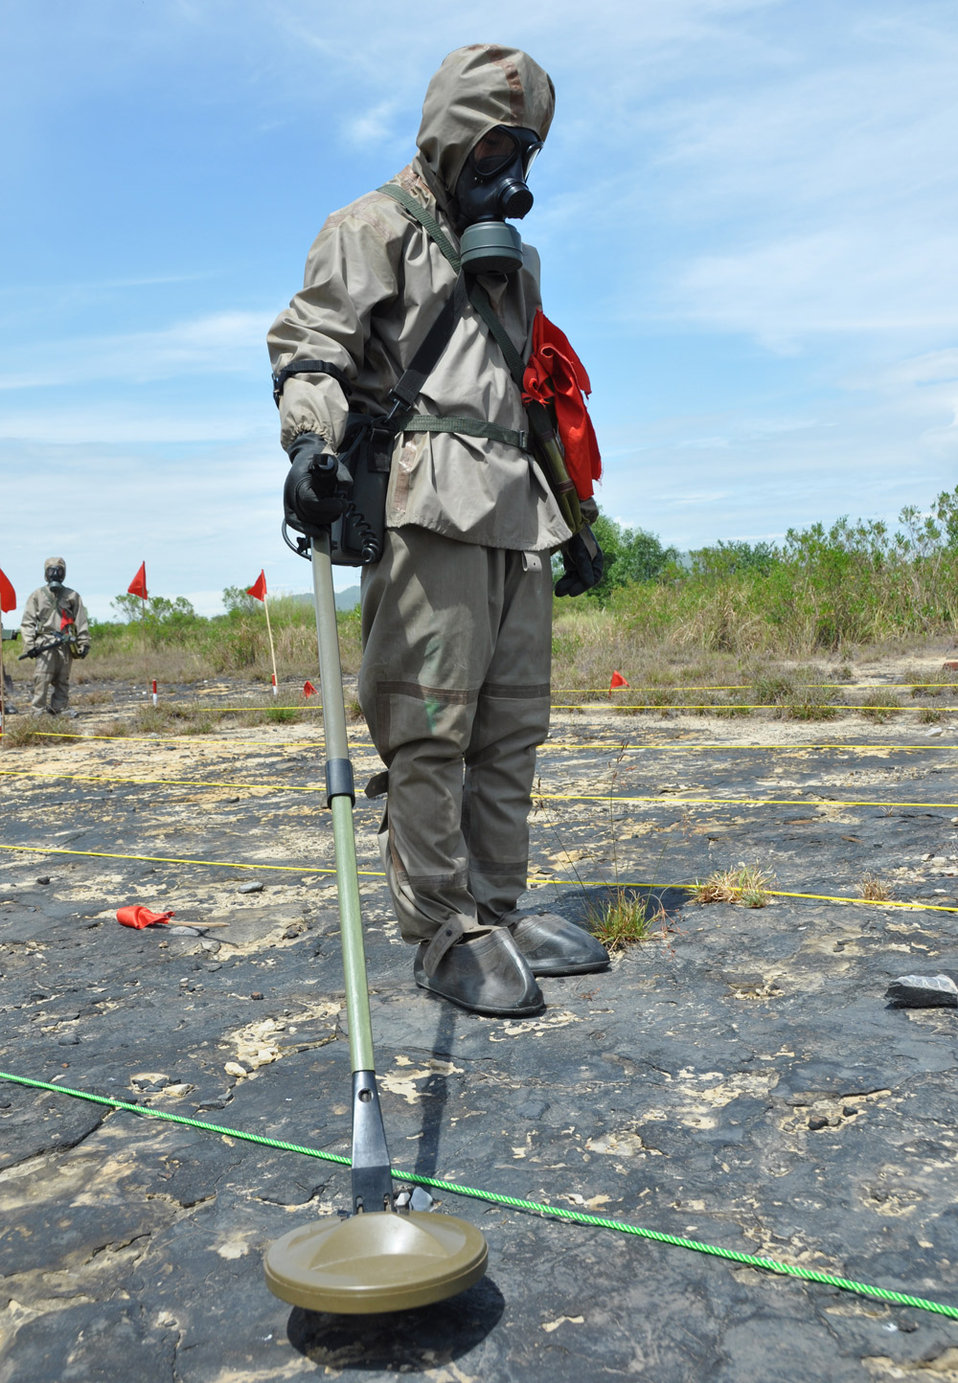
A Vietnamese soldier demonstrates UXO detection and clearance in Danang. June 17, 2011